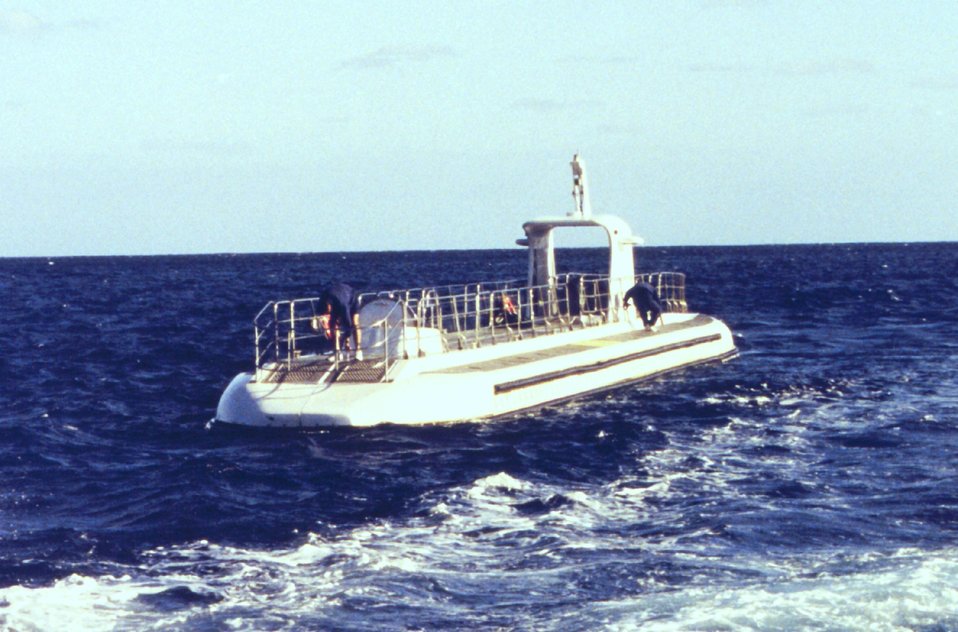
A tourist submarine